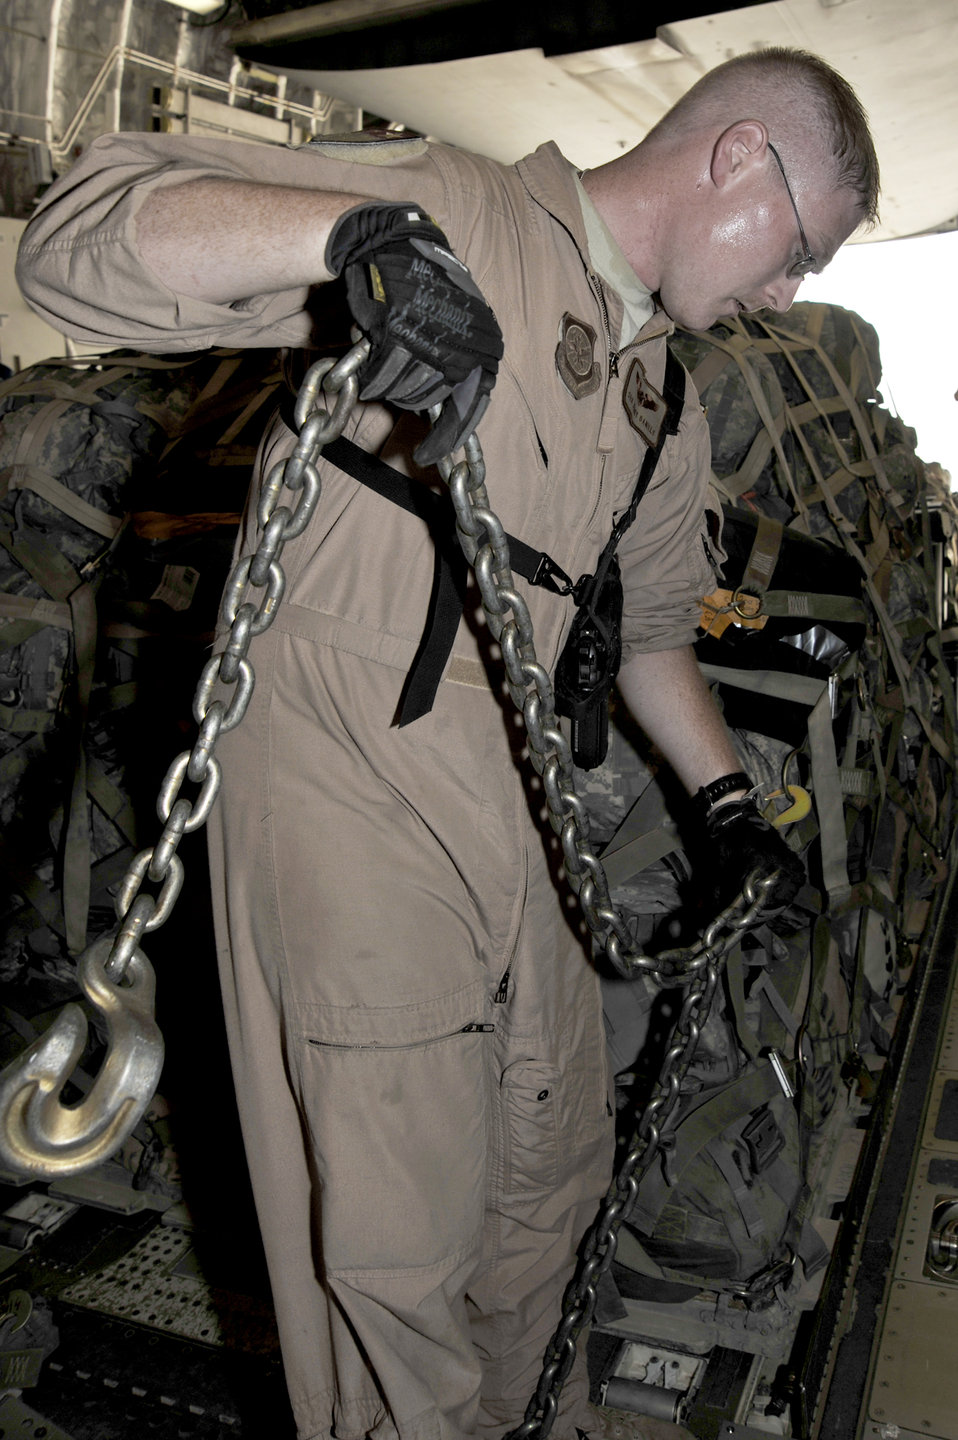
Air Force assets play vital role in Iraq Drawdown

Senior Airman Jerry Daniels connects supplemental restraints to palletized baggage on a C-17 Globemaster III July 10, 2010, at Sather Air Base, Iraq. Air Force assets are assisting with the scheduled Iraq drawdown to 50,000 troops by August 31, 2010. Airman Daniels is a 817th Expeditionary Airlift Squadron loadmaster.